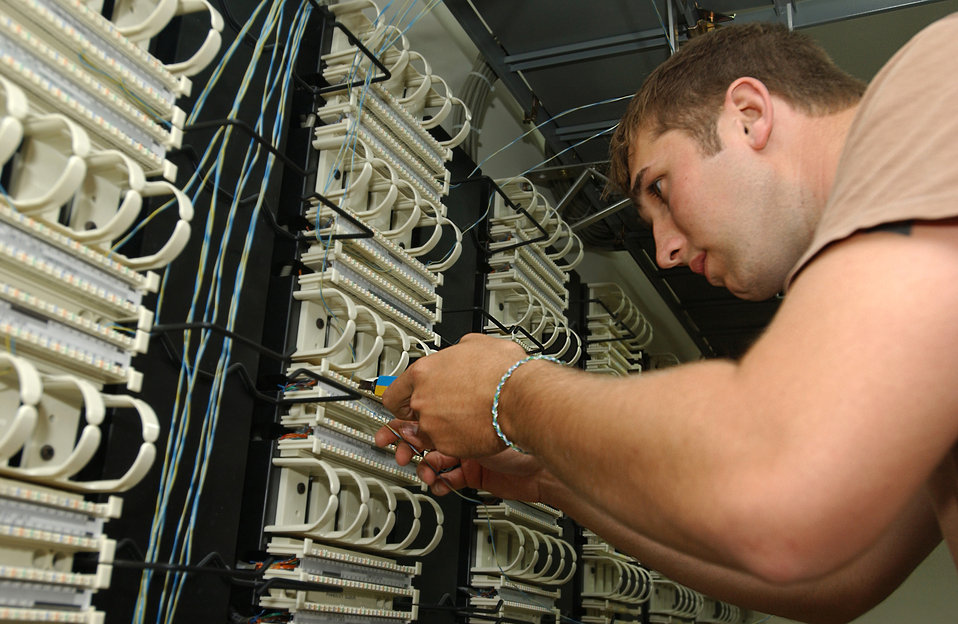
Wires, wires, and more wires

SOUTHWEST ASIA -- Airman 1st Class Brenden McGowan rewires more than 100 telephone lines that were damaged recently. These repairs will re-establish connectivity from the main distribution frame to all of the buildings in the area. Airman McGowan is a telephone maintenance technician from the 379th Expeditionary Communications Squadron.